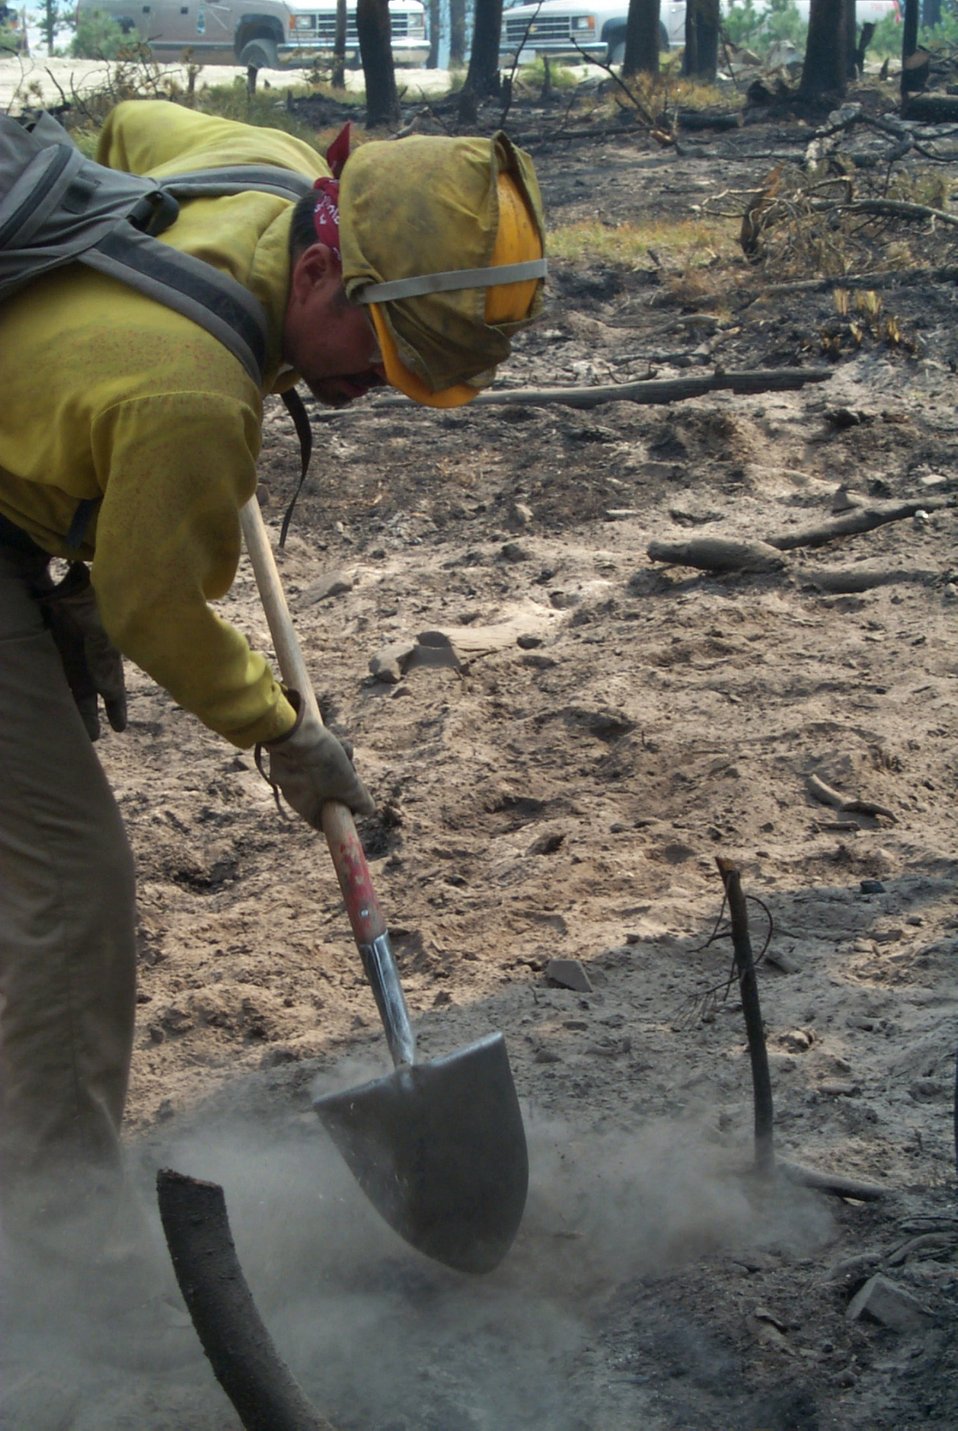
Fire crew Fire Clearwater Fire Salmon Field Office USRD Upper Snake River District